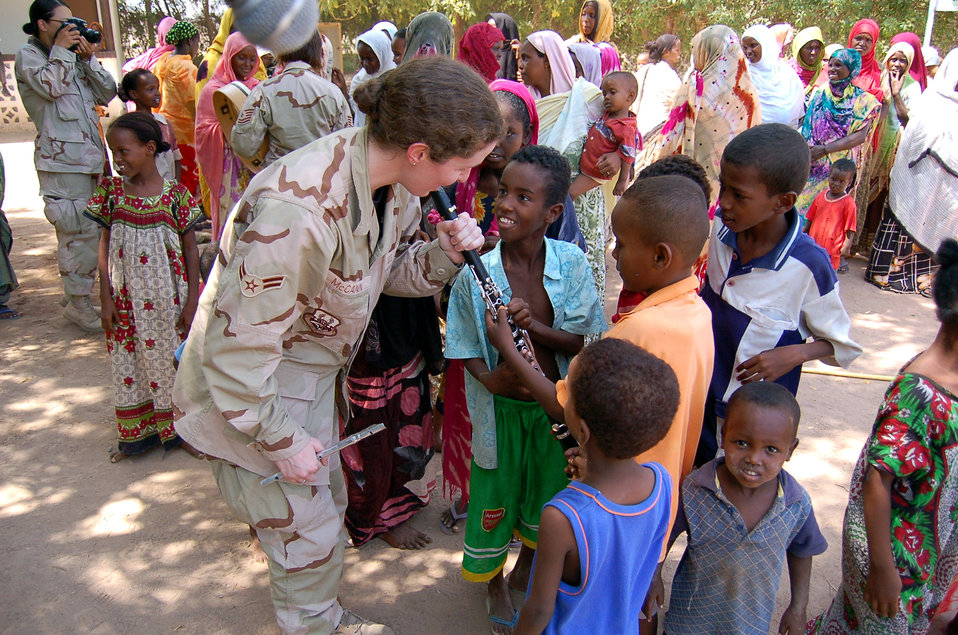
Celtic tunes in Djibouti

Airman 1st Class Amy McCann meets local children in Damerjog village, Djibouti, Oct. 9. Airman McCann and other members of the U.S. Central Command Air Forces Celtic Band performed a 45-minute show and handed out gifts and toys as part of a community relations event. This is the fist time the CENTAF Celtic Band has deployed. Other members of the band are Tech. Sgts. Sherry Burt and Gail Adams, Staff Sgt. Lacey Stokes and Airman 1st Class Brandon Richard.